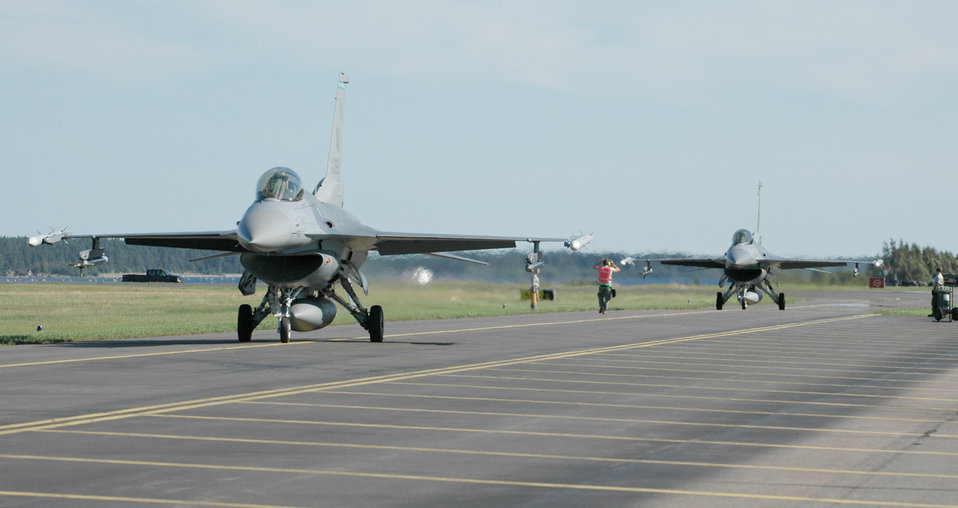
Fighting Falcons return from exercise in Sweden

Two Aviano F-16 Fighting Falcons taxi down the runway after conducting an air-to-ground flying mission Aug. 5, 2010, at Kallax Air Base, Sweden. More than 250 Airmen from the 555th Fighter Squadron and 31st Aircraft Maintenance Squadron traveled to the Swedish air base on July 30, 2010 for a two week exercise conducting air-to-air and air-to-ground flying missions alongside Swedish air force members assigned to Norrbotten Wing.